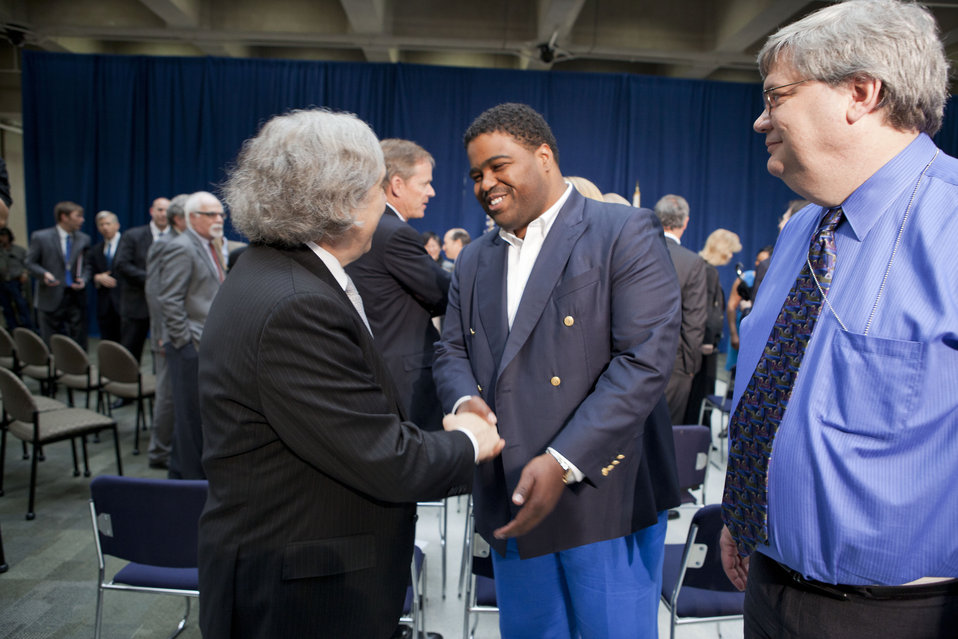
Secretary Moniz Meets DOE Employees

After the ceremony, attending members of the Department of Energy community were able to meet Secretary Moniz. Many friends and colleagues welcomed him back to the Department of Energy.